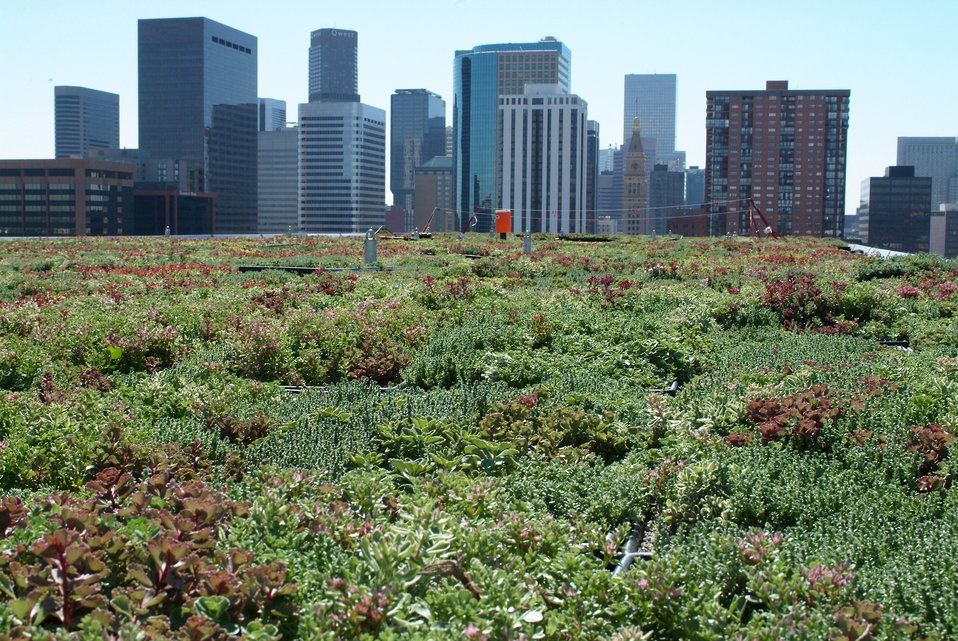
A Green Roof in the Heart Denver

Region 8 Green Office Building includes one of the first green roofs of its kind in the state of Colorado. The roof provides air and water quality benefits and reduces building heating and cooling needs.

To find out more about the Region 8 green building: www.epa.gov/region8/building/

To find out more about the Region 8 green building green roof: www.epa.gov/region8/building/green roof.html